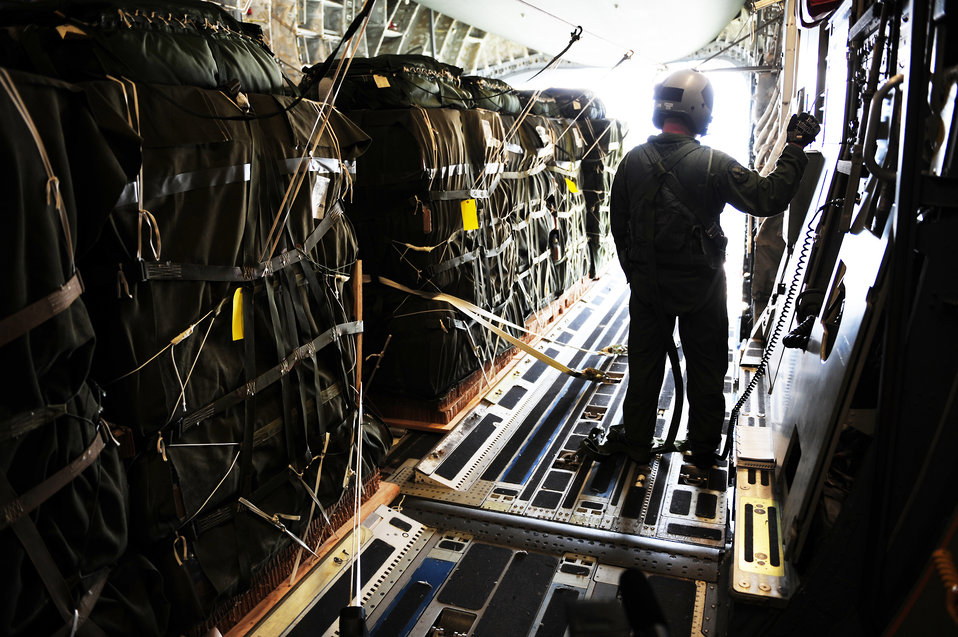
Meals, water delivered for Haiti relief

Staff Sgt. Matthew Shields, a C-17 Globemaster III loadmaster assigned to the 15th Airlift Squadron at Charleston Air Force Base, S.C., awaits the green light during an air delivery mission over Haiti in support of Operation Unified Response Jan. 21, 2010. The crew delivered 40 container delivery system bundles totaling 67,800 pounds of Meals, Ready to Eat and bottled water.